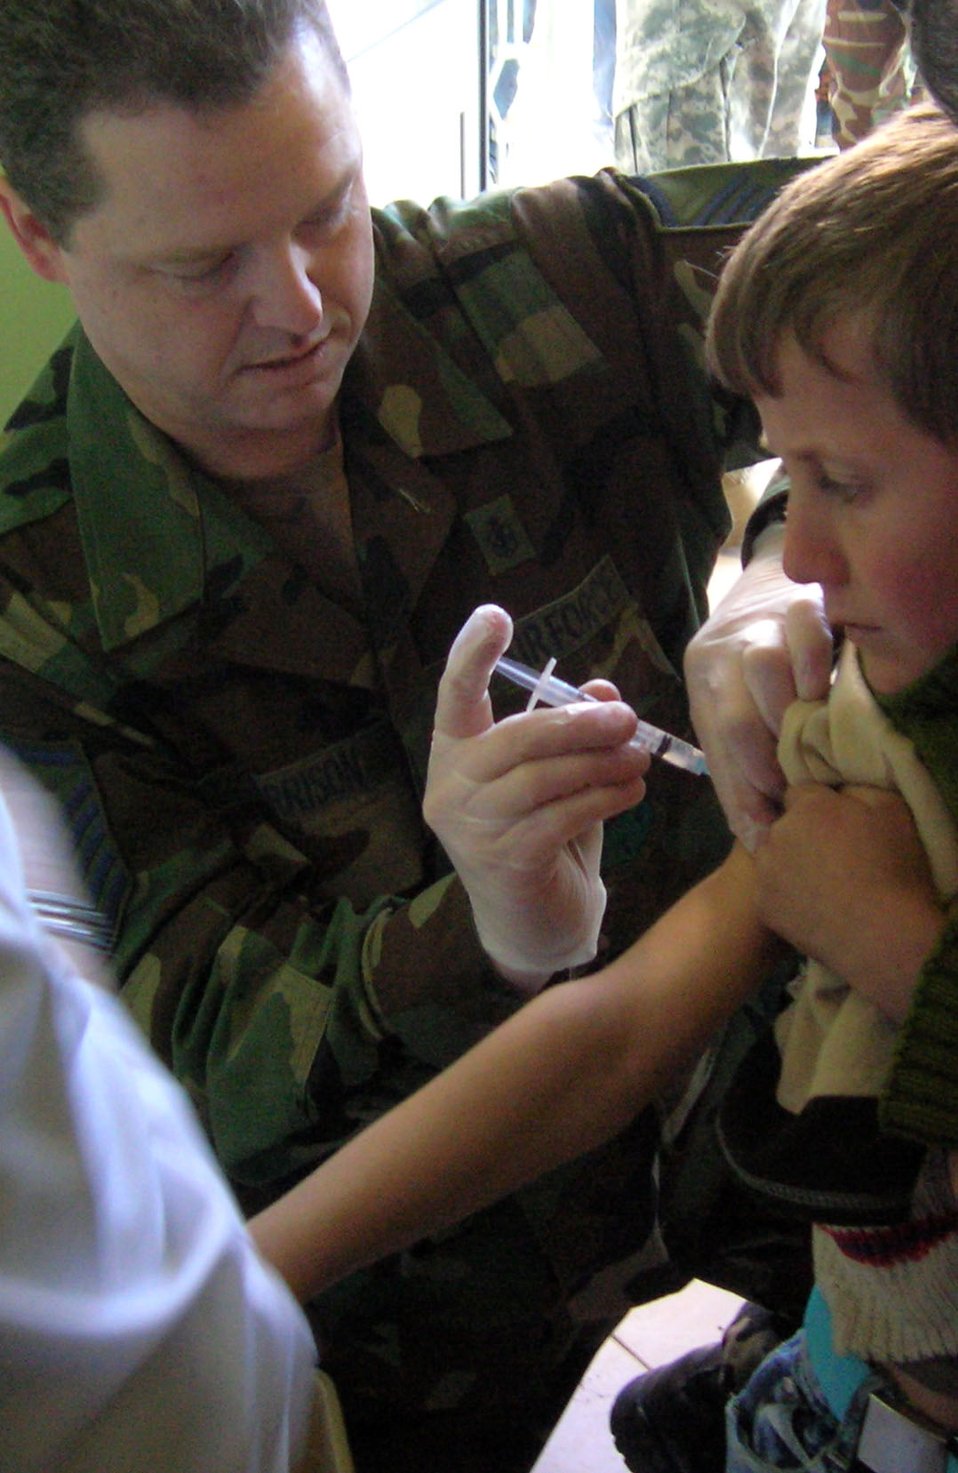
Medics provide humanitarian support in Albania

Master Sgt. David Morrison administers the Hepatitis A shot to an Albanian boy in February in Albania. Sergeant Morrison, along with four other 109th Airlift Wing medics from the Stratton Air National Guard Base in New York, administered 1,000 Hepatitis A shots during a humanitarian mission with the New Jersey National Guard.